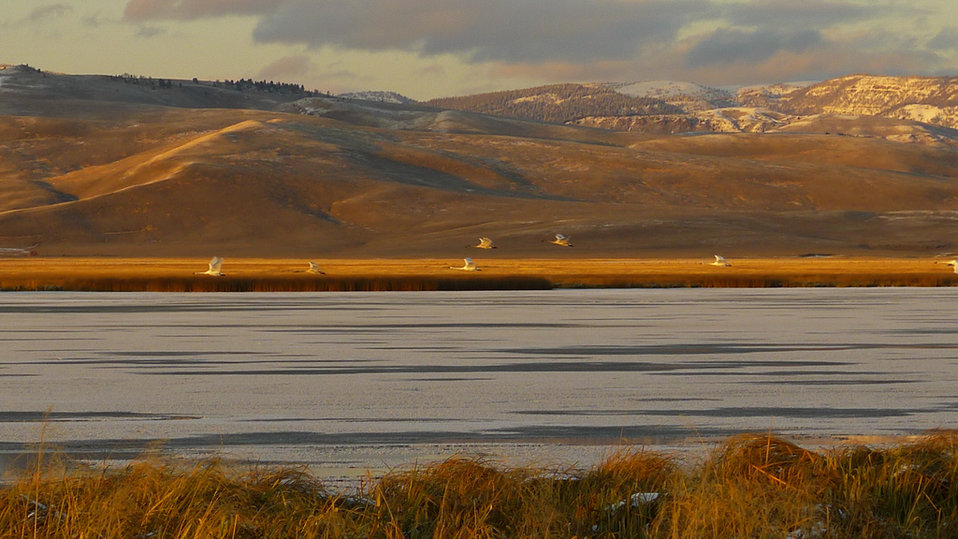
trumpeter swans at Lower Red Rock Lake

Red Rock Lakes National Wildlife Refuge, MT